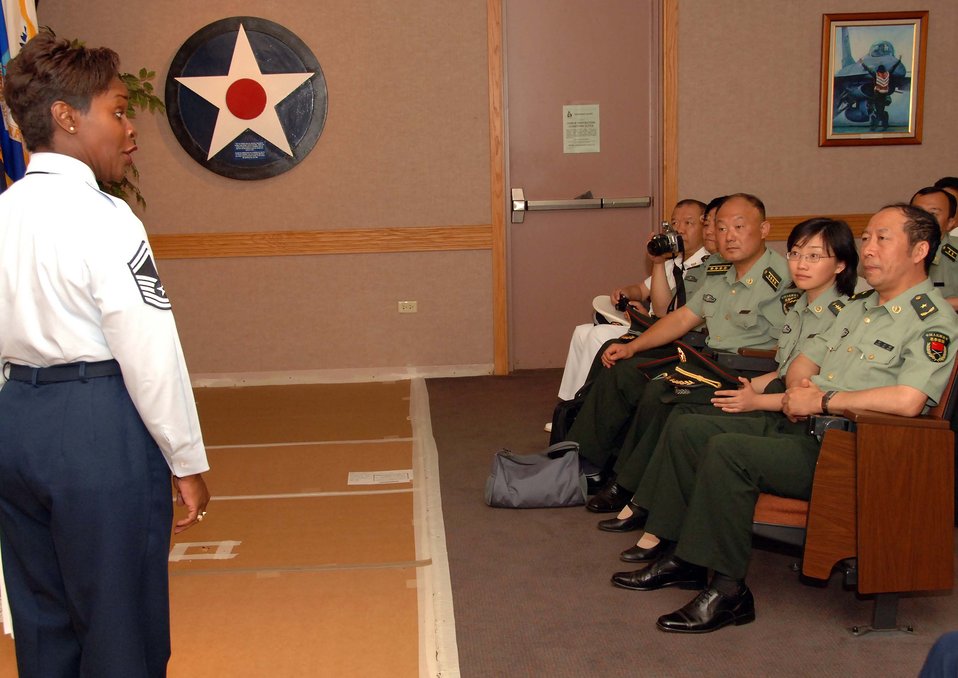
China military delegation visits Hickam AFB

Senior Master Sgt. Vanessa Smallsbryan provides a brief about Airman Leadership School to China's People Liberation Army Maj. Gen. Zhong Zhiming and his delegation. The visit is part of a continuum of reciprocal exchanges between the United States and China and contributing to the steady progress of our military-to-military relationship-building activities. Sergeant Smallsbryan is the director of education for the Hickam Professional Military Edcuation Center.